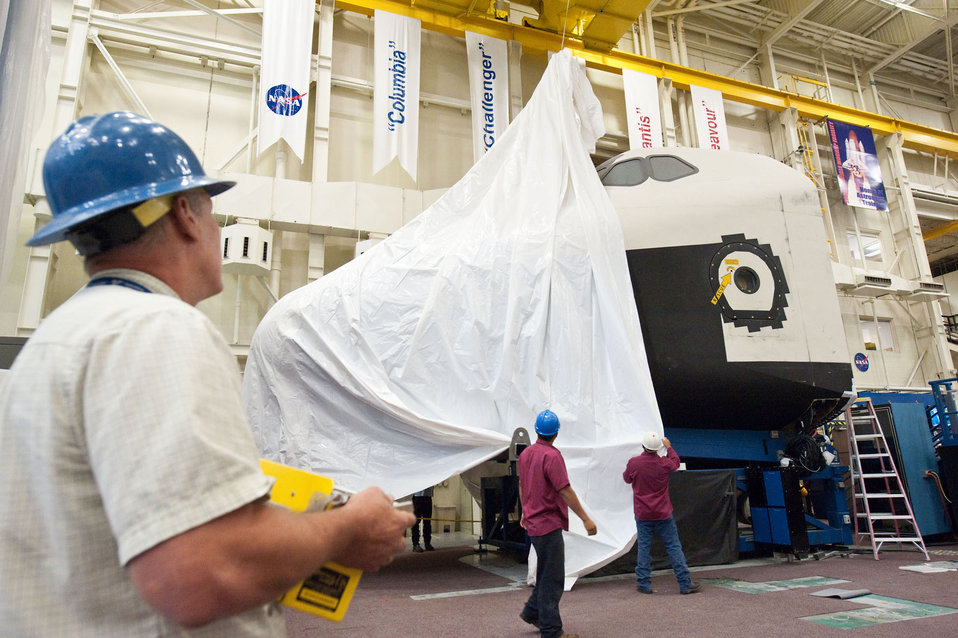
NASA's Crew Compartment Trainer

The NASA Crew Compartment Trainer is shrink-wrapped by NASA officials in Houston on July 9, 2012, in preparation for its move from the Johnson Space Center to the National Museum of the U.S. Air Force. The museum is located at Wright-Patterson Air Force Base, Ohio.